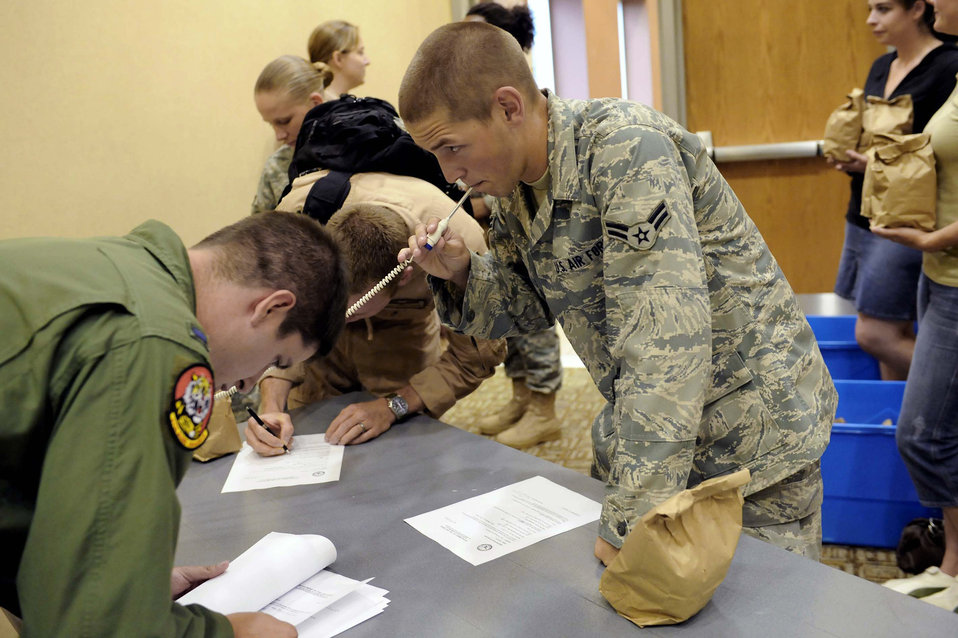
Airmen deploy to Southwest Asia

Airman 1st Class Zachary Aichele gets medically screened before deploying from Ellsworth Air Force Base, S.D. recently. The Airman is from the 28th Operations Support Squadron.